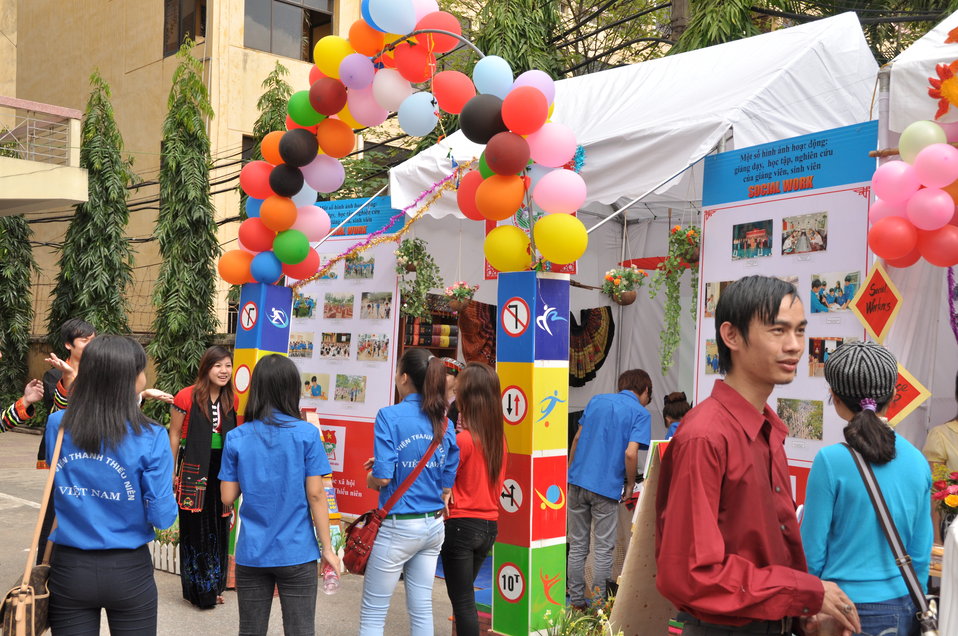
USAID Supports Social Work Education

Photo: @USAIDVietnam, November 9, 2012